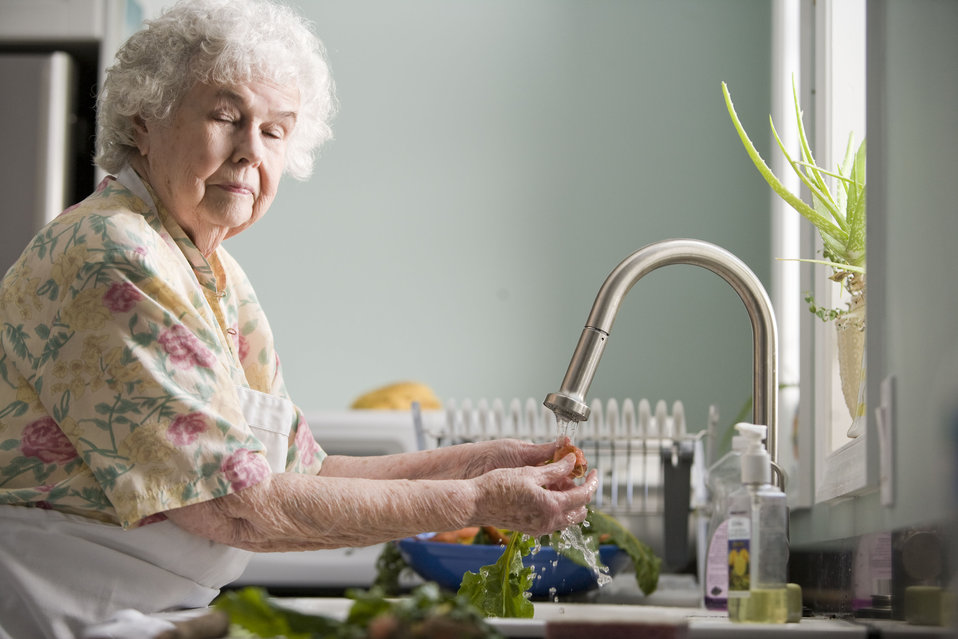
Properly cleaning fresh, uncooked produce is a must when preparing a meal, and with this in mind, the elderly woman pictured here was doing just that, as she was thoroughly cleaning a number of carrots and radishes. Note that there was soil still clinging to the tubers, which would have to be entirely removed using vigorous scrubbing with soapy warm water. Cleaning also will remove environmental pollutants, such pesticides from the foods' surfaces.